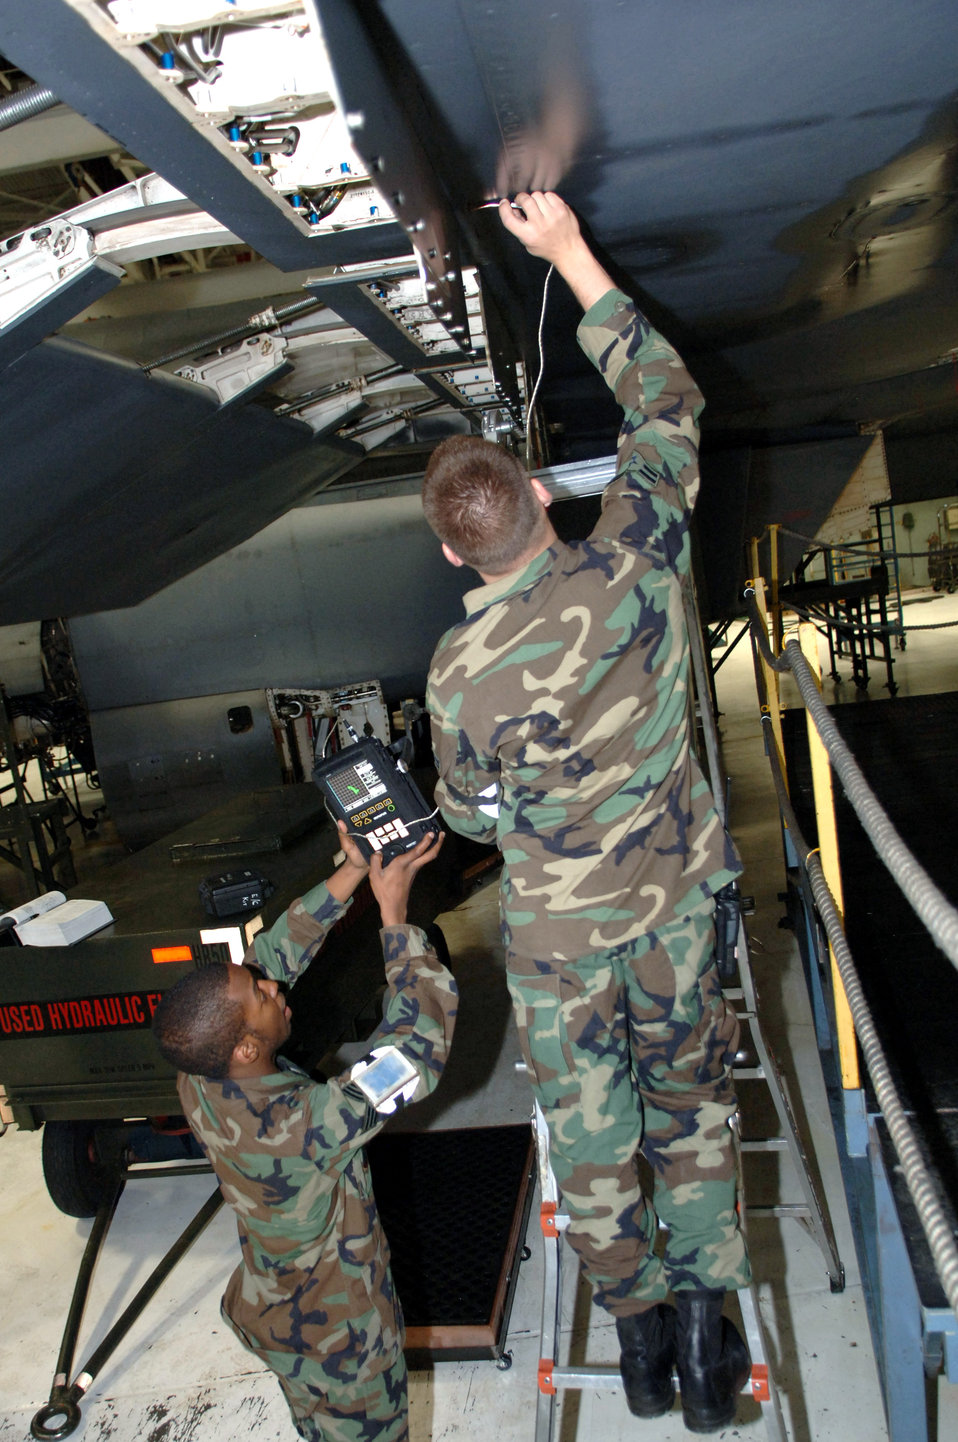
Inspections technician know-how

Airman 1st Class Ehud Torres and Senior Airman Raunedrick Nash inspect for possible cracks with the Nortec 2000D on the B-1B Lancer March 19 at Ellsworth Air Force Base, S.D. The Airmen are nondestructive inspections technicians with the 28th Maintenance Squadron.